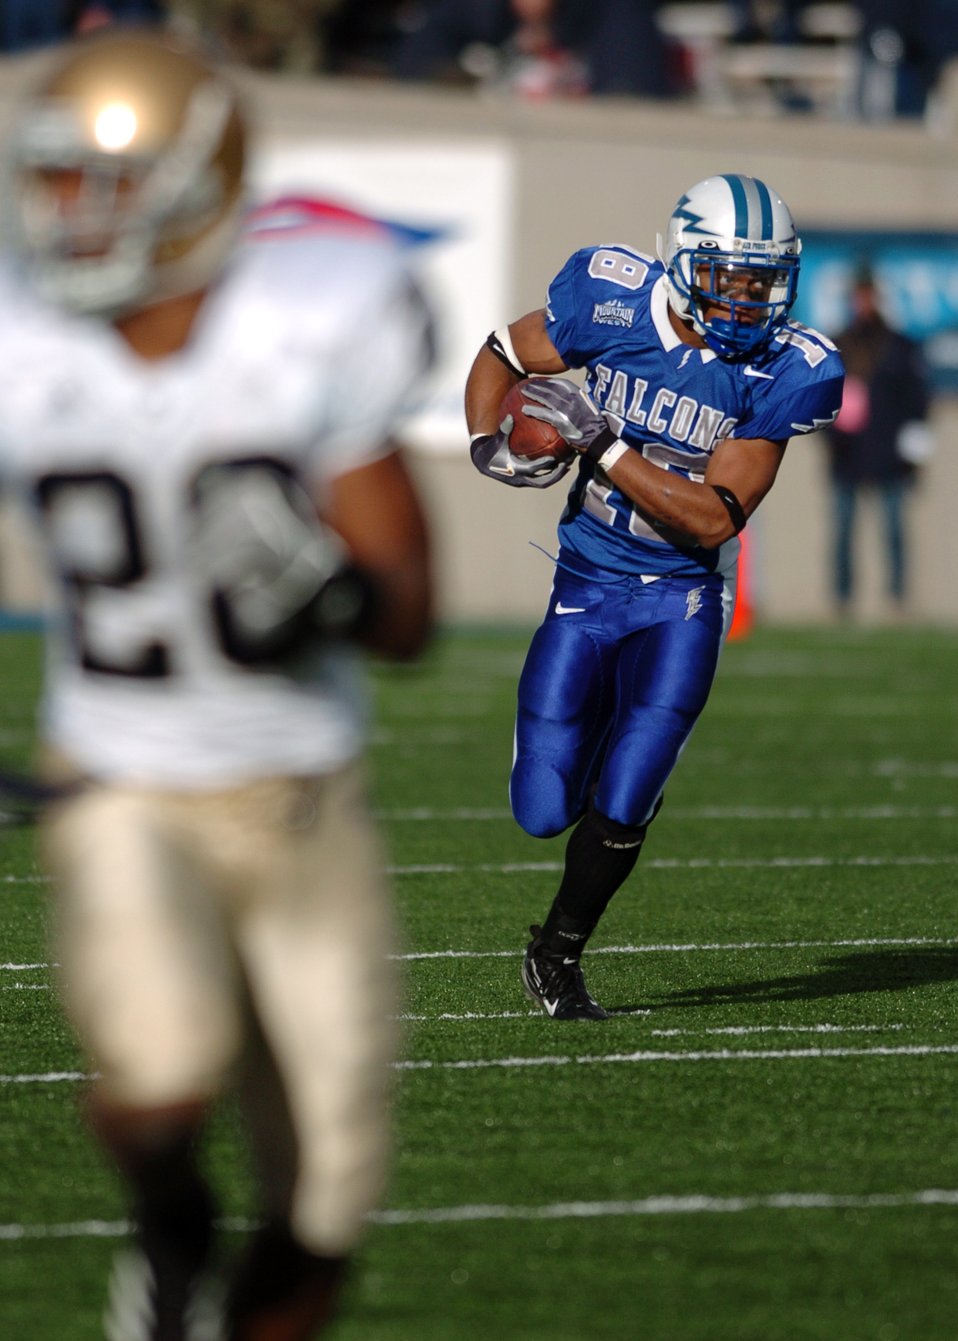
Short Gain

Air Force halfback Justin Handley looks for room upfield on a short second-quarter gain. Ten Falcons carried the ball for 200 total yards, but Irish quarterback Brady Quinn?s four passing touchdowns were too much for Air Force. Eighth-ranked Notre Dame won, 39-17.